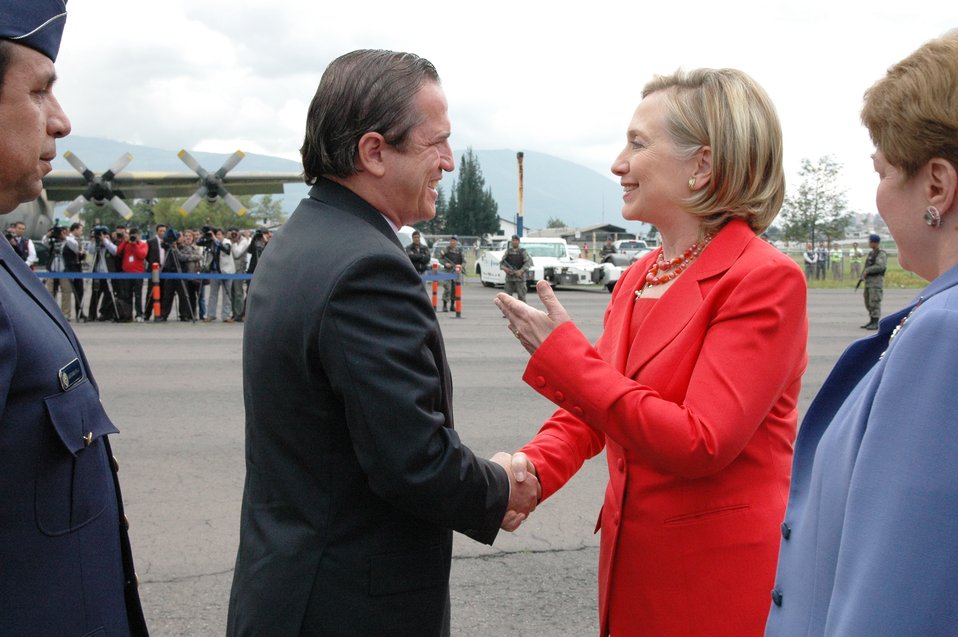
Secretary Clinton Is Greeted By Ecuadorian Foreign Minister Ricardo Patiño

U.S. Secretary of State Hillary Rodham Clinton is greeted by Ecuadorian Foreign Minister Ricardo Patiño in Quito, Ecuador, on June 8, 2010.